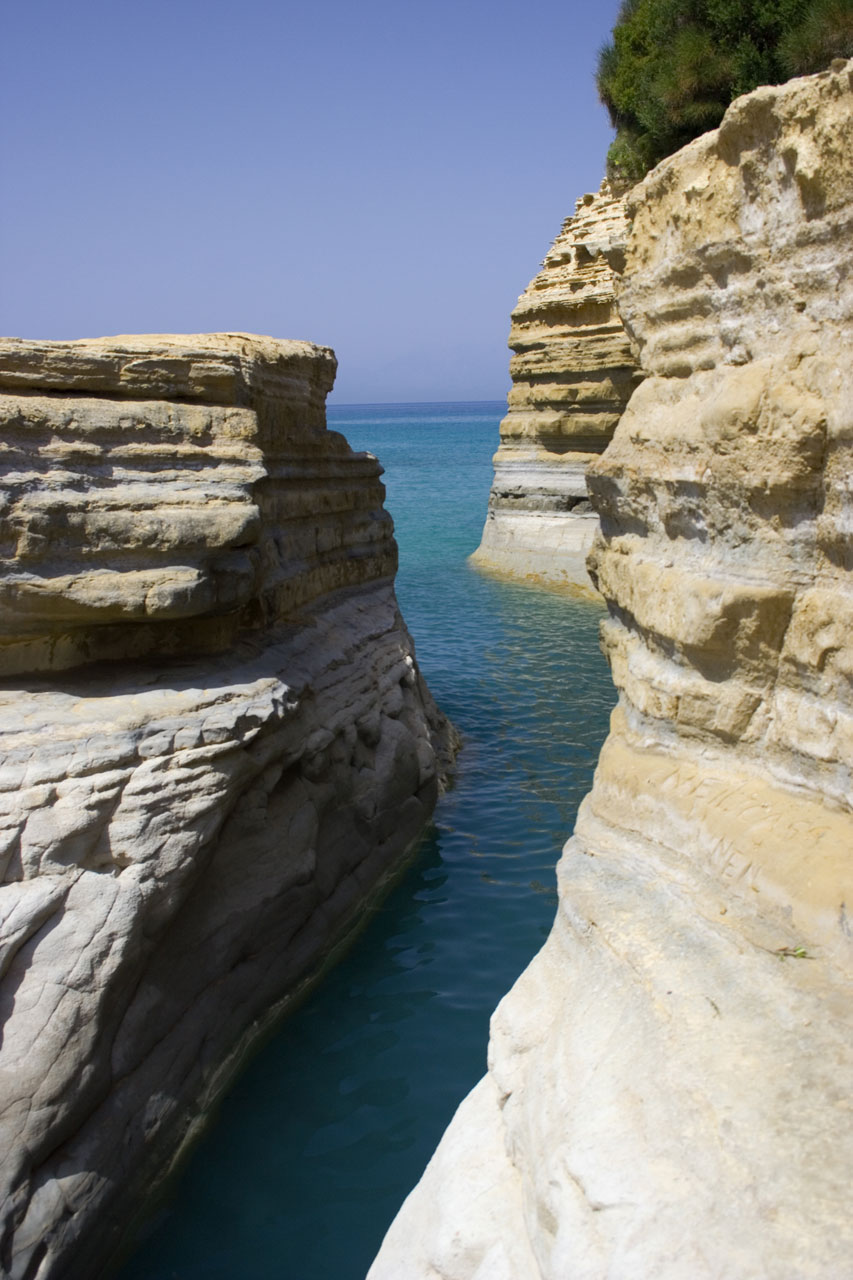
Limestone rocks rocks on corfu island.